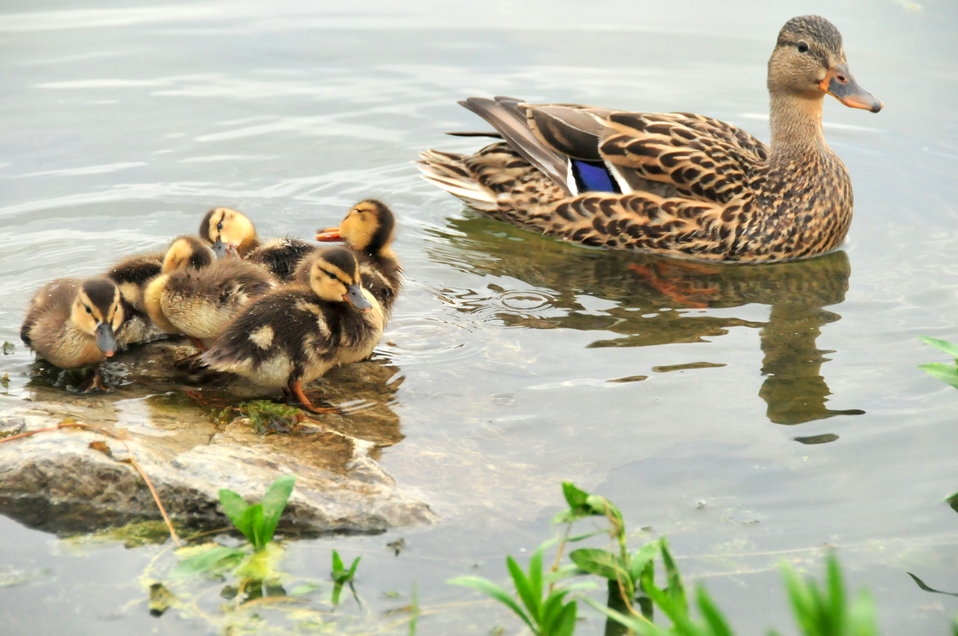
Mallard Hen and Brood